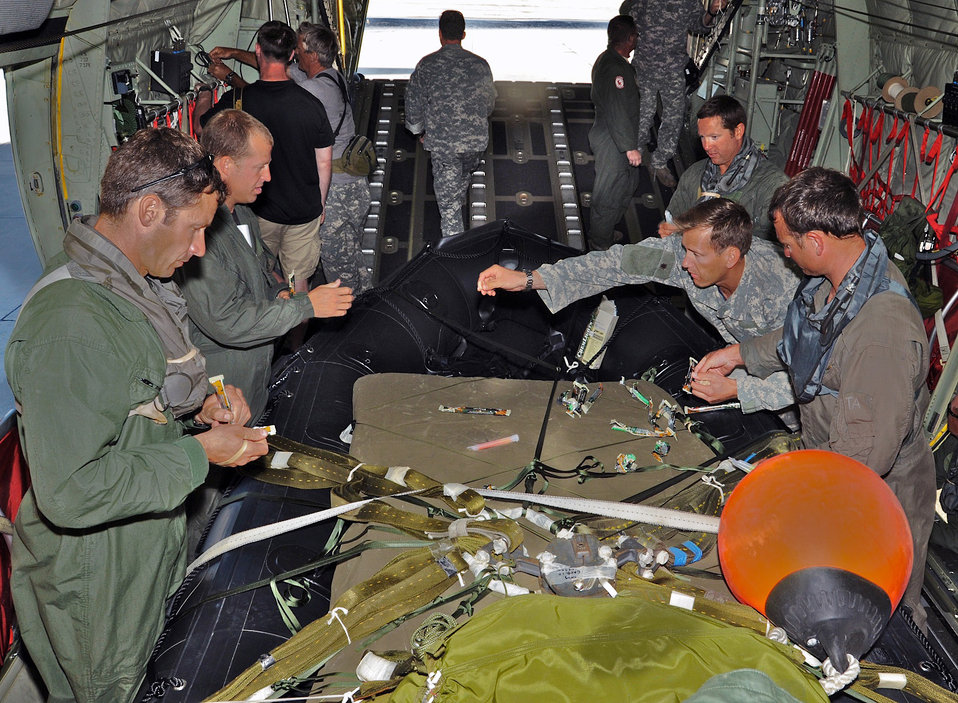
Joint training mission enables reservists to train as they fight

Army instructors assist 815th Airlift Squadron loadmasters in preparing the assault raft for the aircraft's takeoff April 12, 2010, in Key West, Fla.